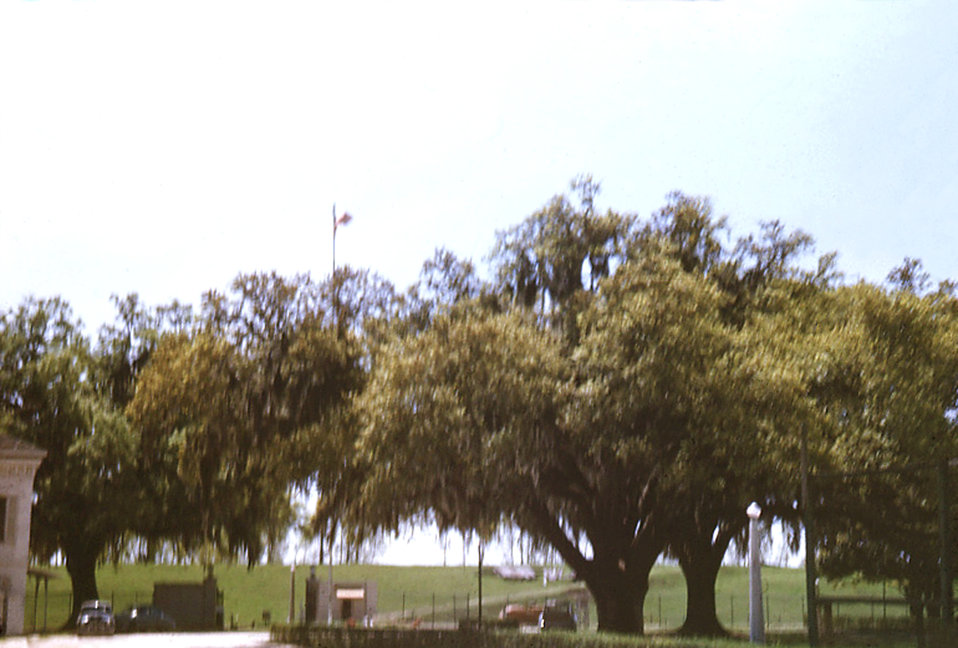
This was a view just inside the gate of the Carville, Louisiana Leprosarium, where a traffic circle and watchman's booth were visible. Off to one side was the administration building, and to the other were the living quarters for the medical and personnel staff members. "Patients of the U.S. Marine Hospital in Carville, Louisiana, produced a set of 35 mm slides around 1950 from which this image was derived. In 2002, a patient's son donated the set, the only one known in existence, to the museum. The father, a patient at Carville for several years, brought these slides home around 1950 to give his family a snapshot of life at the national leprosarium. The act of quarantining patients for leprosy (HD) remained law in the state of Louisiana until 1957."